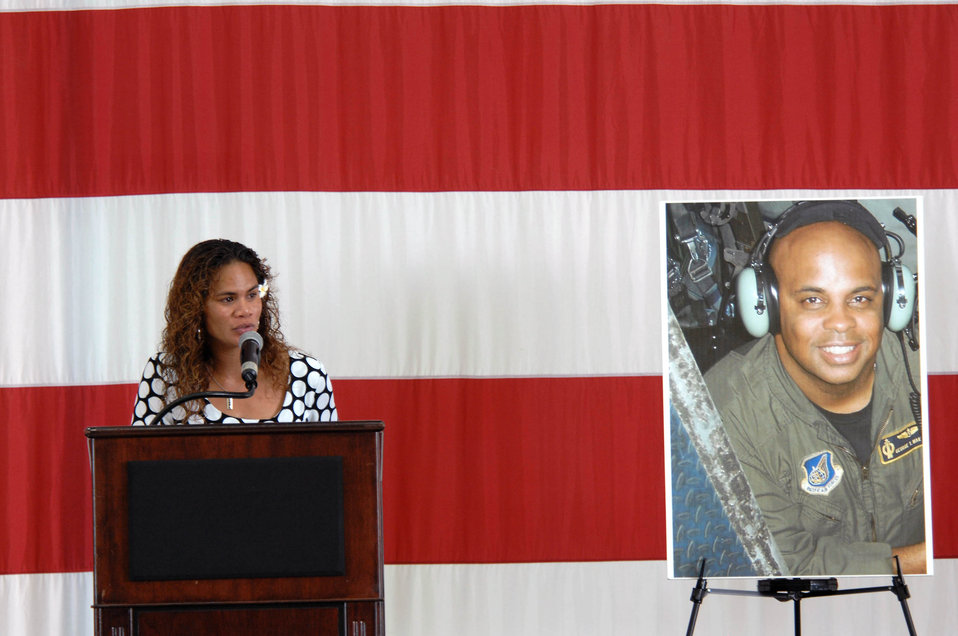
Raider 21 crew remembered

Ursula Martin, wife of Col. George Martin, thanks the myriad of agencies July 25 for their search for the Airmen who lost their lives in the July 21 B-52 crash. Colonel Martin, 36th Medical Group deputy commander, was on